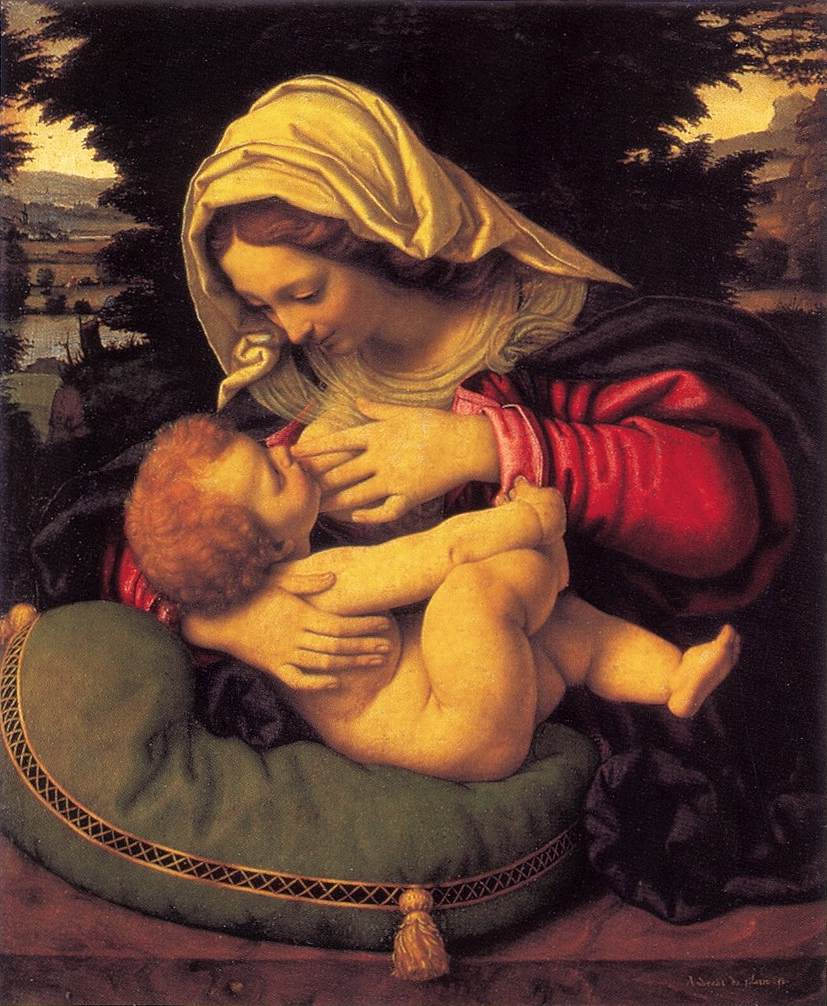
Andrea Solario - Madonna of the Green Cushion - WGA21602